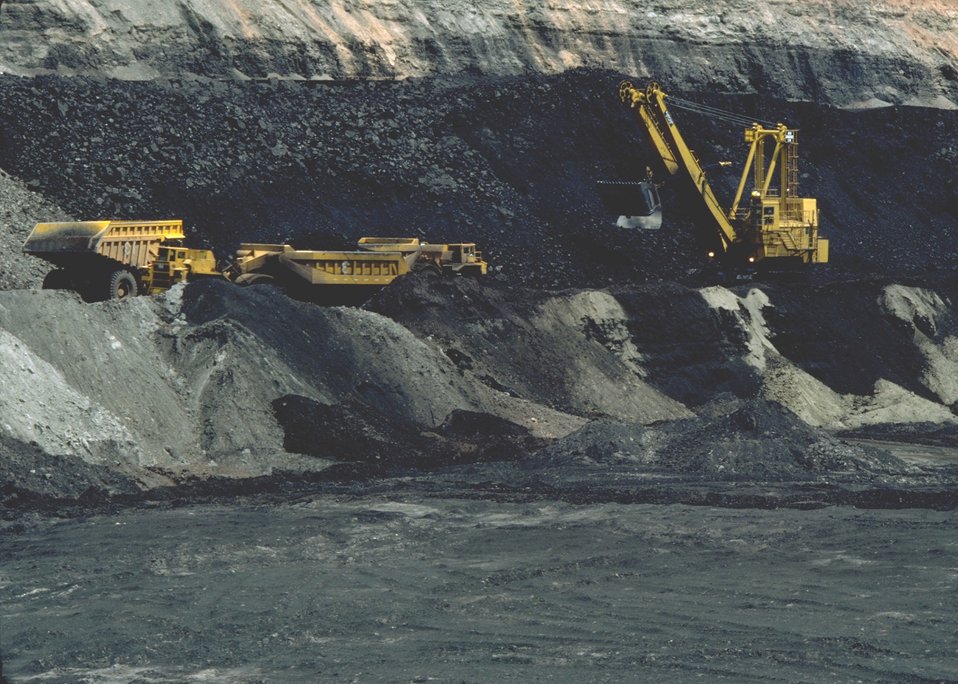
Coal bed methane development.